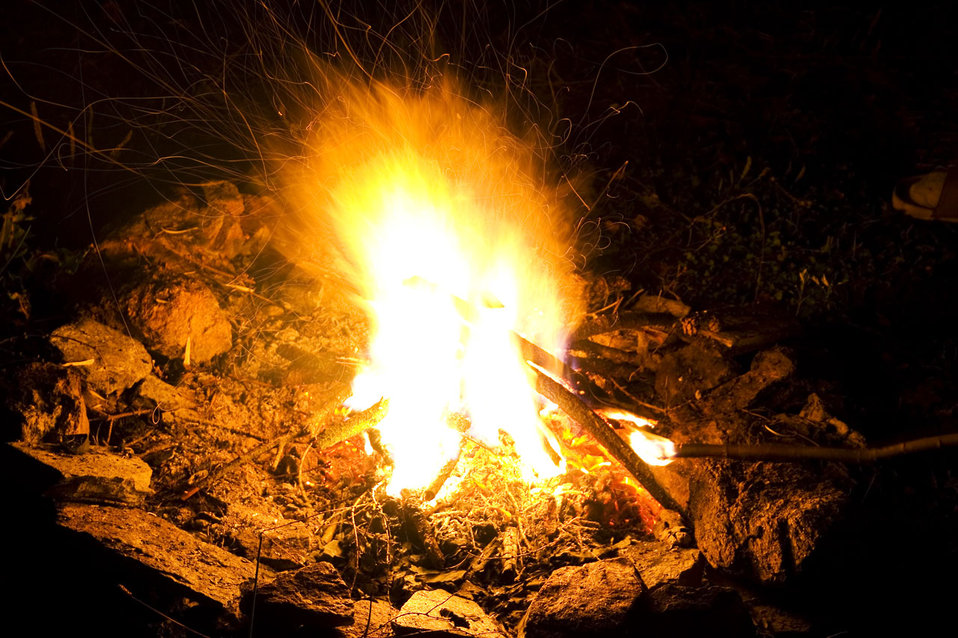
Fire

A small fire at night.